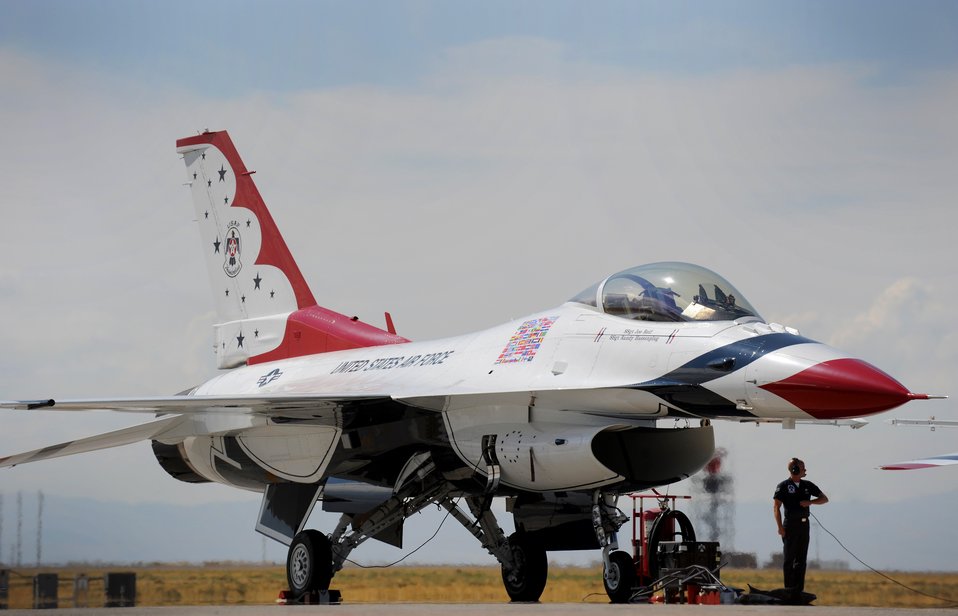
Ready for action

A member of the U.S. Air Force Thunderbirds Aerial Demonstration Team performs preflight checks prior to their practice performance Sept. 16, 2011, at Mountain Home Air Force Base, Idaho.